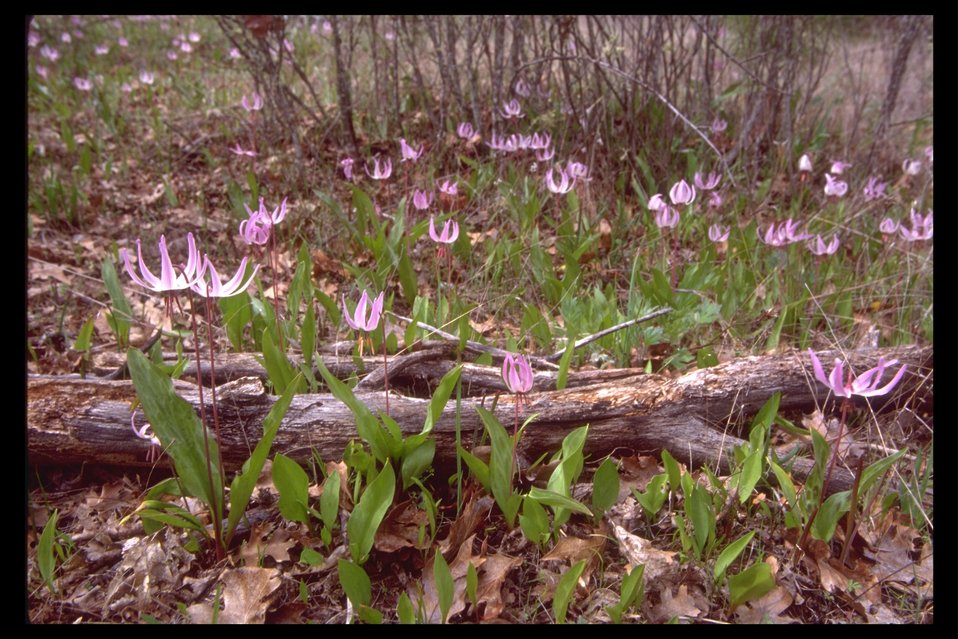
Henderson's Fawn Lily (Erythronium hendersonii) around Upper Table Rock.